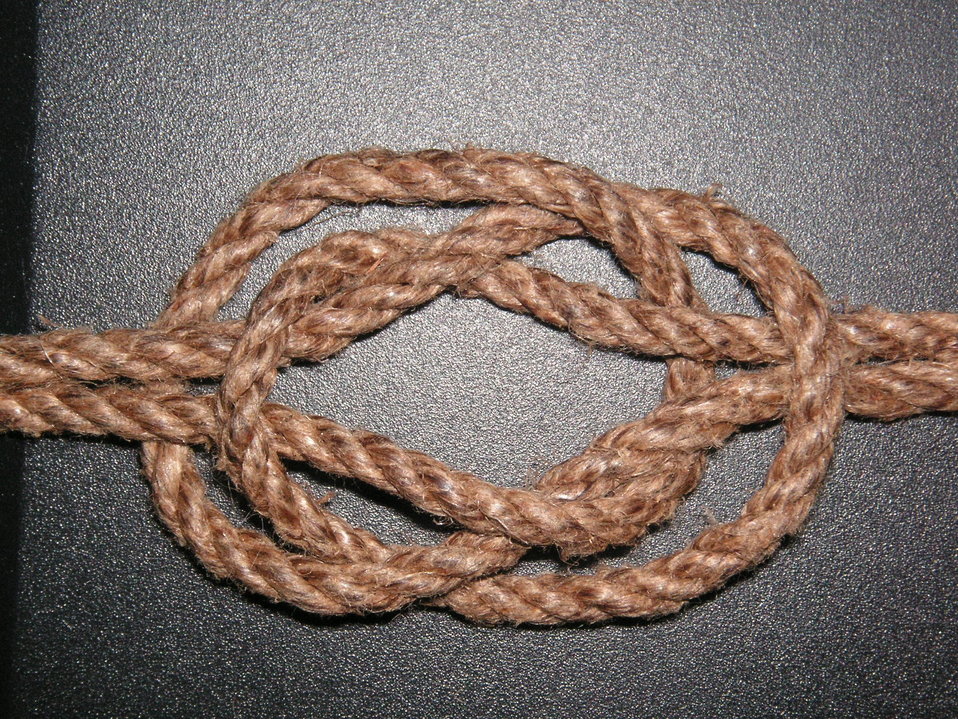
Public domain Public domain false false This work has been released into the public domain by its author, [[User:Sebbe|Sebbe]]. This applies worldwide.
In some countries this may not be legally possible; if so:
[[User:Sebbe|Sebbe]] grants anyone the right to use this work for any purpose, without any conditions, unless such conditions are required by law. Public domain Public domain false false